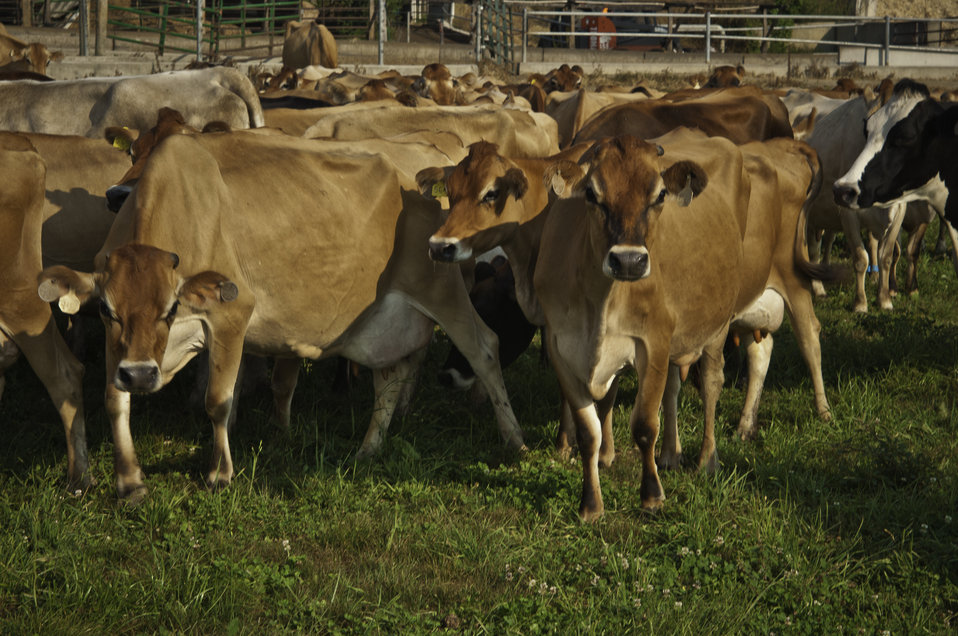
Jersey and Holstein cows of Chapel’s Country Creamery in Easton, MD graze on grass at the farm. The dairy produces artisanal cheeses with high quality fresh raw milk, rich in cream. The cows graze on clover and rye grass on 45 acres of pasture. The cows are rotated among 32 different pastures to insure that the cows are eating the freshest and most nutritious part of the grass thus providing the highest quality of raw milk that is rich in cream. The milk is all-natural and contains no synthetic hormones, antibiotics, or chemical compounds.